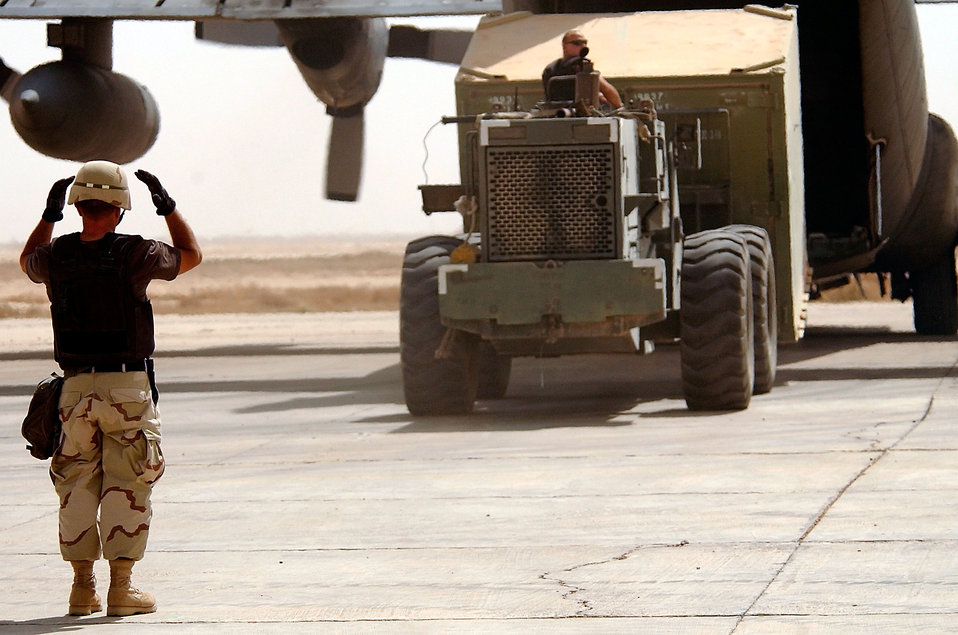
Back it up

OPERATION IRAQI FREEDOM -- Senior Master Sgt. T.J. Jones, 621st Tanker Airlift Control Element from the 821st Air Mobility Squadron at McGuire Air Force Base, N.J., marshals back a forklift at an undisclosed location on April 4.